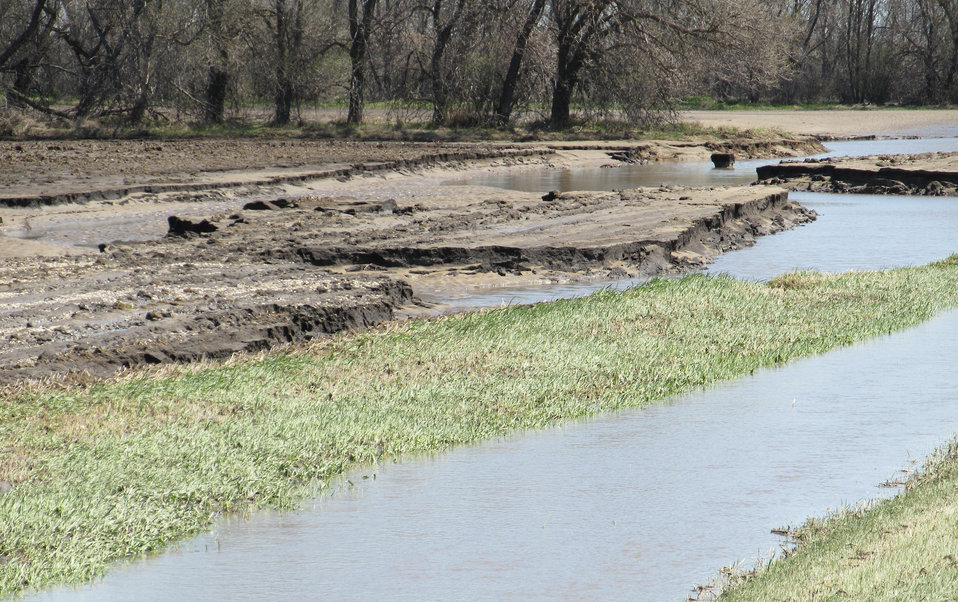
Flooding and water damage in the Park and Tongue River Watersheds located in Cavalier, Pembina and Cavalaier Counties in ND on Thursday, May 23, 2013.